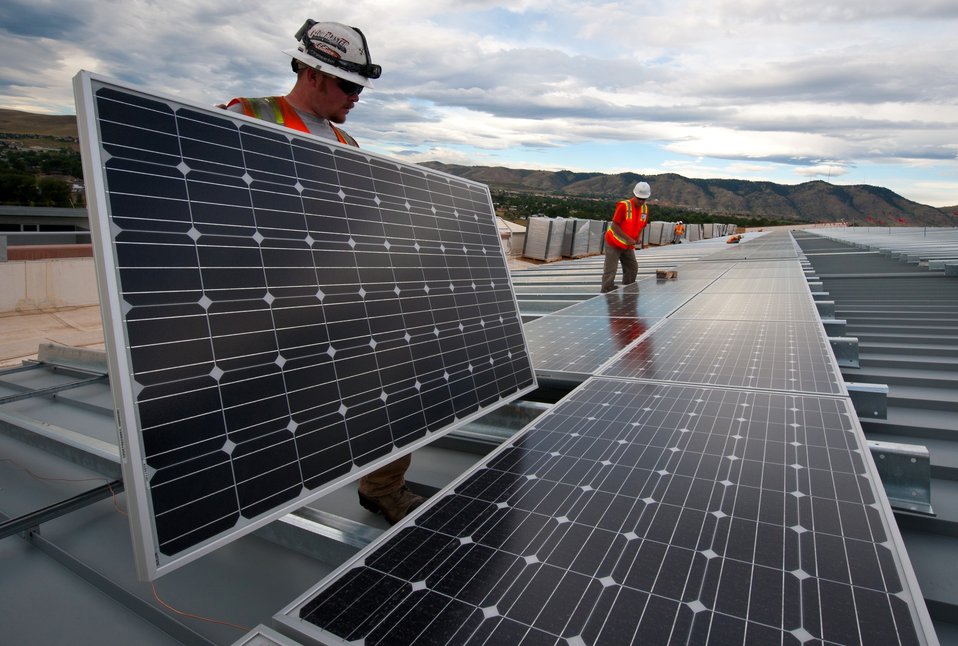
INSTALLING PHOTOVOLTAIC PANELS ON THE ROOF AT THE RESEARCH SUPPORT FACILITY, RSF.

NREL works on panels that DOE is using leverage a Power Purchase Agreement with SunEdison and Xcel Energy to absorb the upfront installation costs.